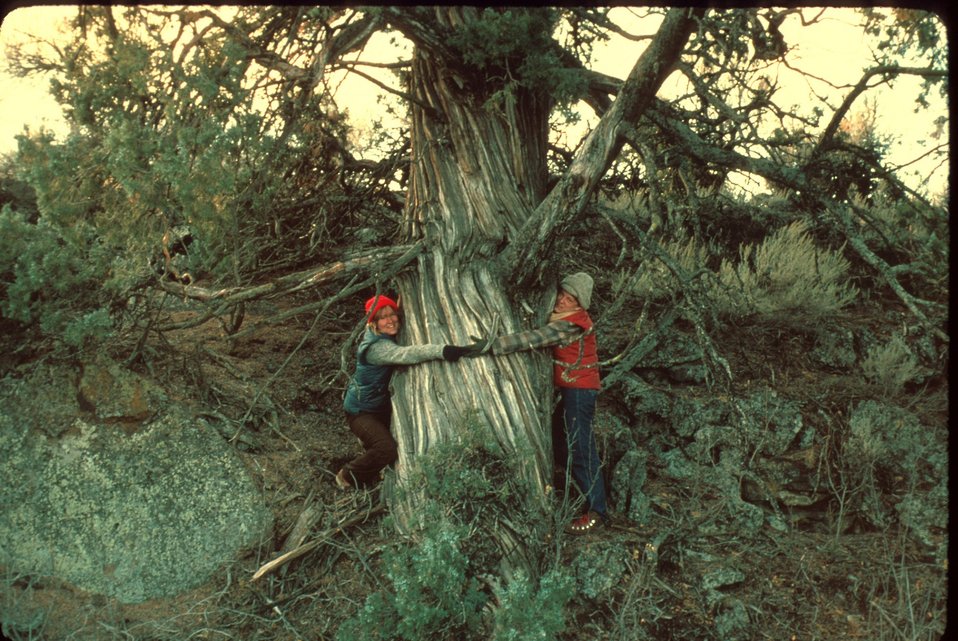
Tree